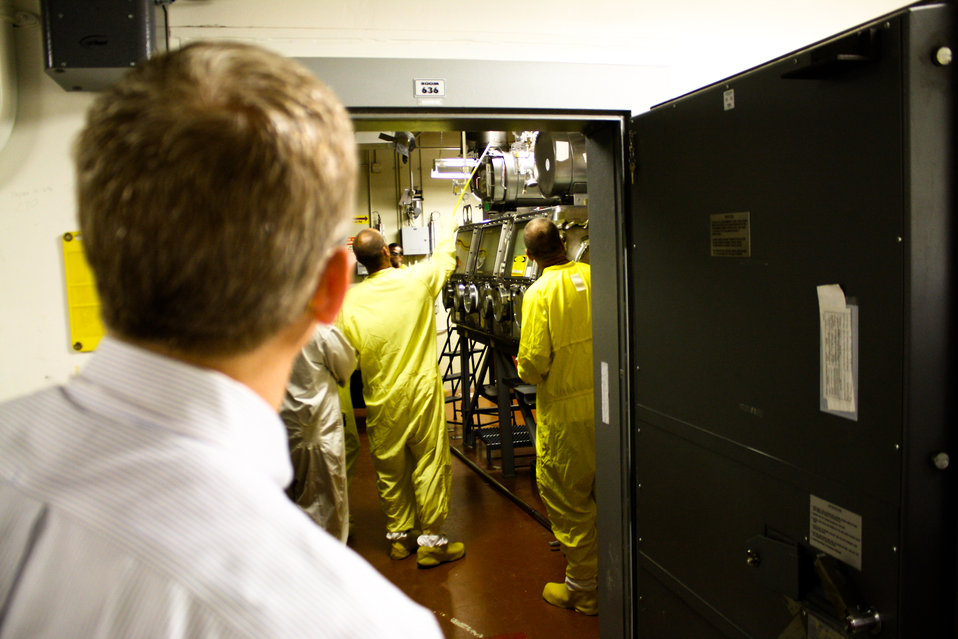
Poneman Vit Plant Visit 06-14-10-170